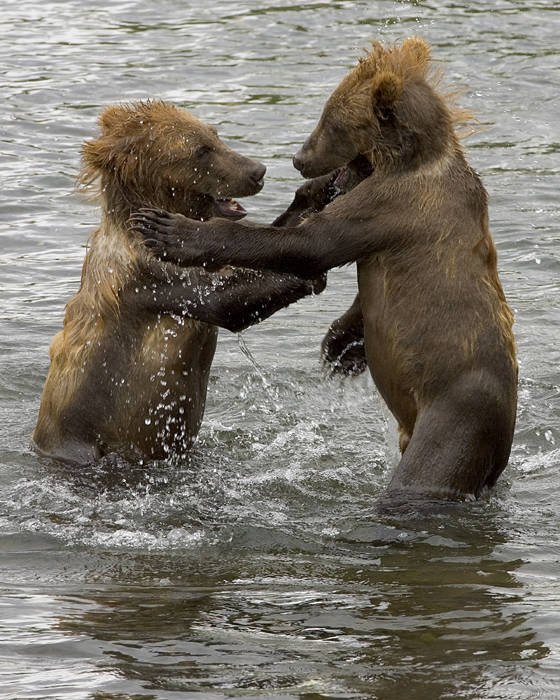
brown bear cubs

Kodiak National Wiildlife Refuge, AK